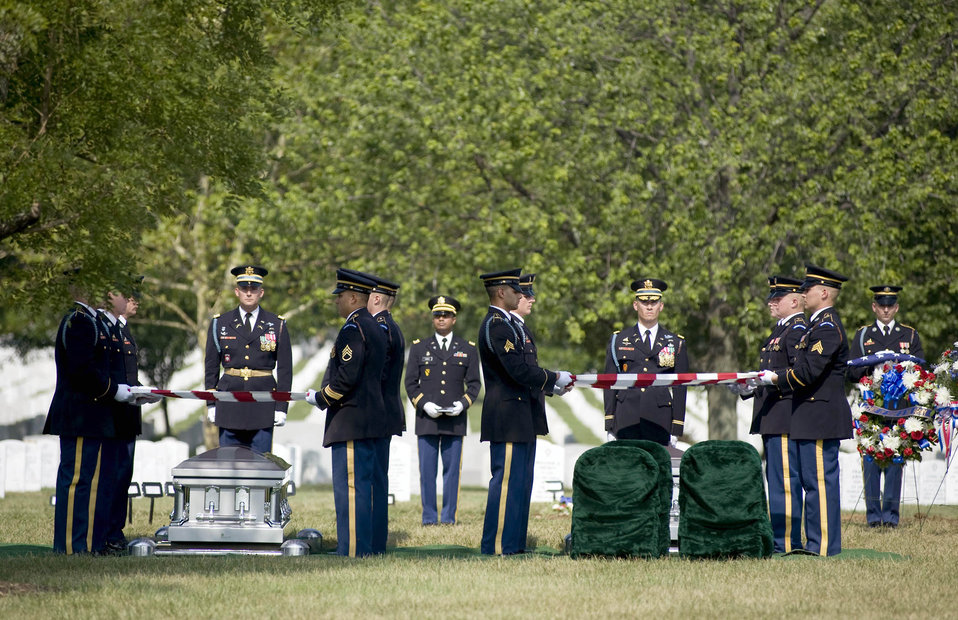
Seven WWII Airmen buried at Arlington National Cemetery

Soldiers from The Old Guard prepare to fold two American flags that were draped over two caskets containing the remains of seven Airmen who died in Burma in 1944 July 15, 2010 at Arlington National Cemetery, Va.